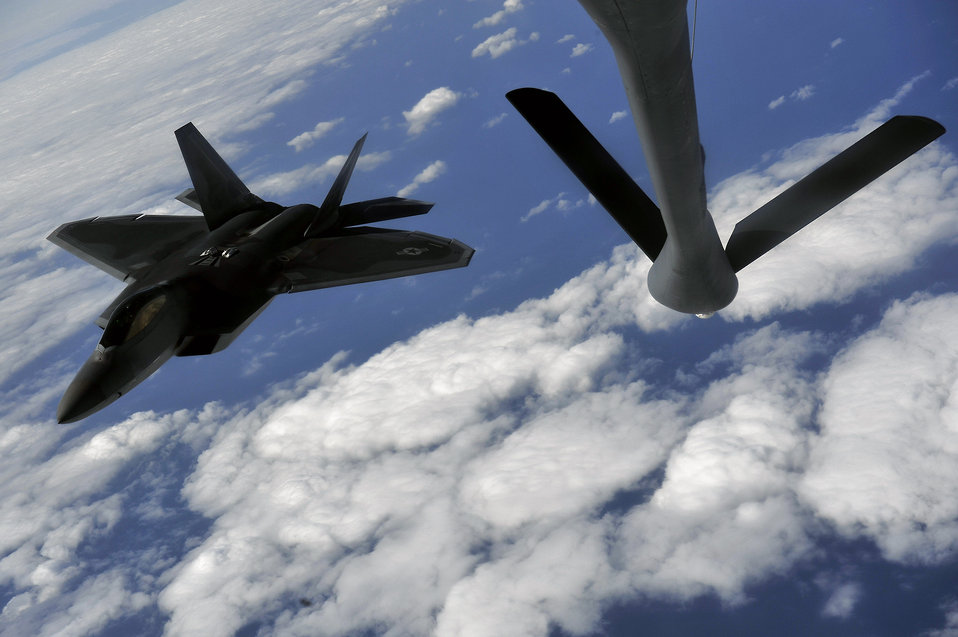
F-22s begin training in Japan

An F-22 Raptor prepares to be refueled by a KC-135 Stratotanker Jan. 15. The F-22 is deployed to Kadena Air Base, Japan, from the 27th Fighter Squadron at Langley Air Force Base, Va., in support of U.S. Pacific Command.